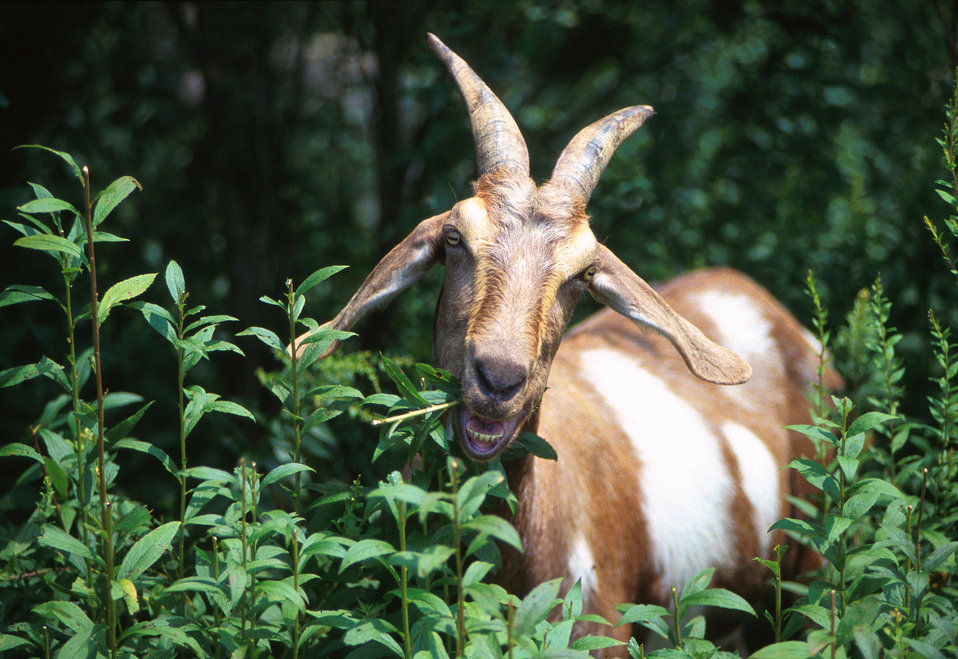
Preferring woody and weedy species, goats select the young growing points first as they browse downward from the upper parts of a plant.